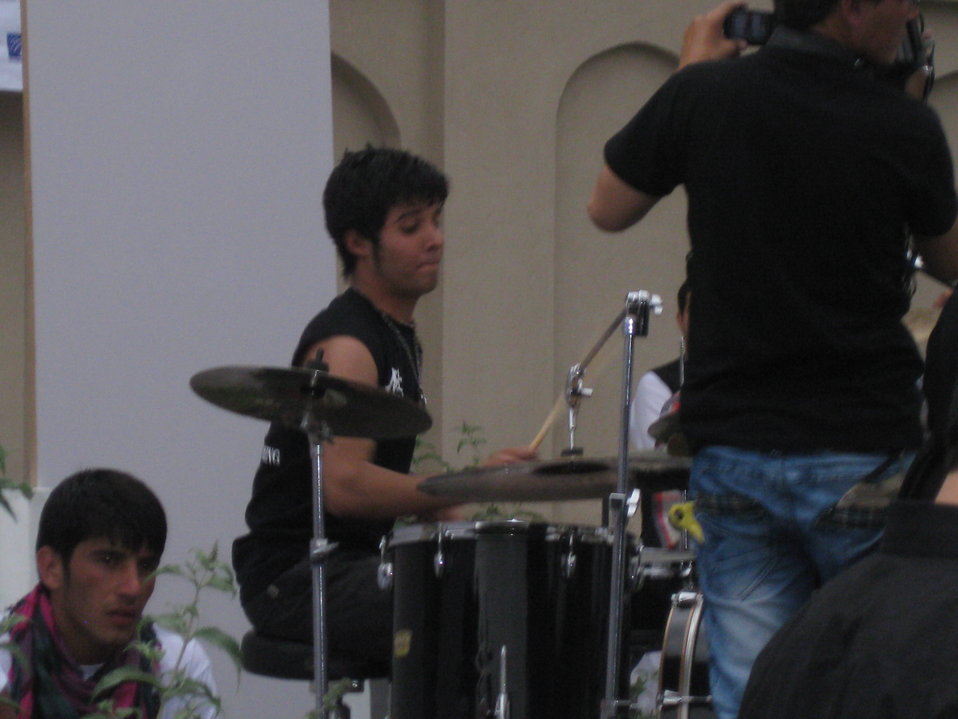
Afghan Youth Voices 106